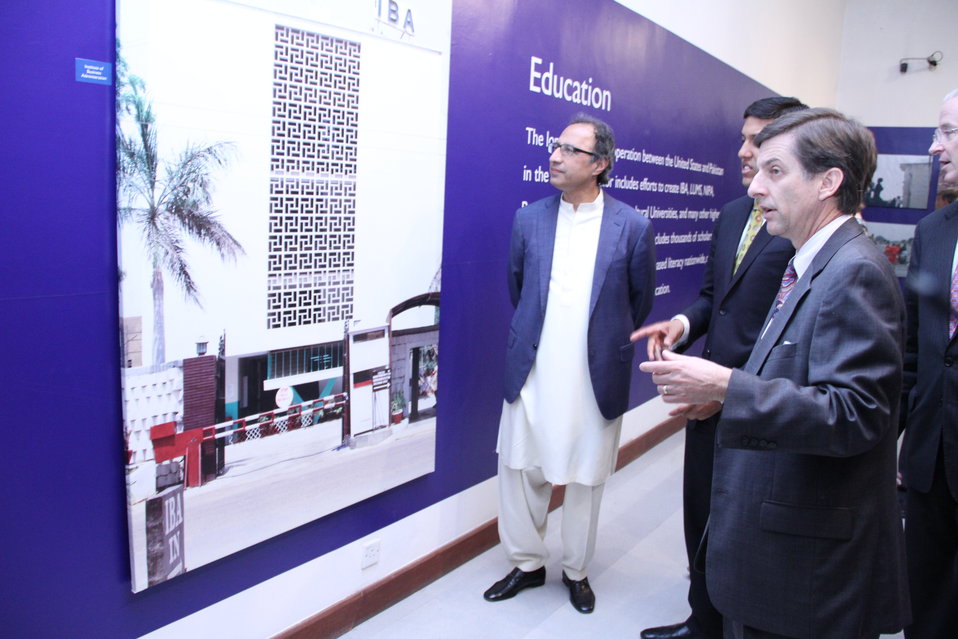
Photo Exhibition Celebrate US-PAK Cooperation at PNCA, Islamabad on April 13, 2012

Dr. Abdul Hafeez Sheikh on Photo Exhibition with US Officials